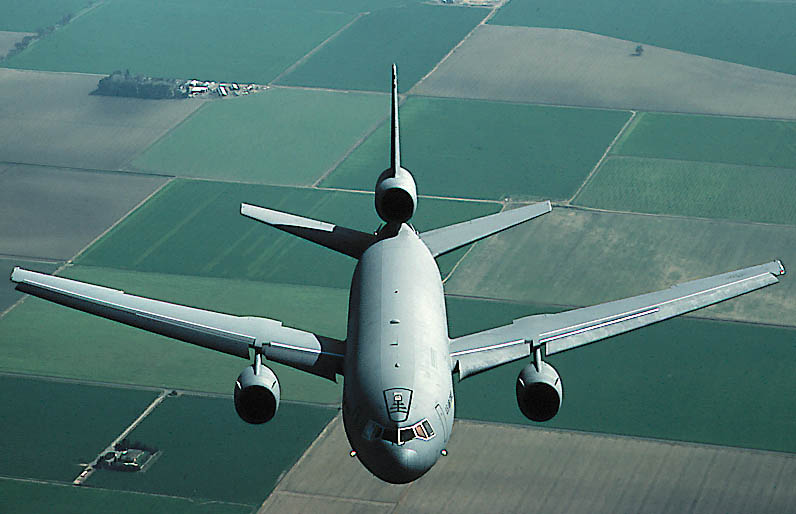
Extender in flight

FILE PHOTO -- The KC-10A Extender is an Air Mobility Command advanced tanker and cargo aircraft designed to provide increased global mobility for U.S. armed forces. Using either an advanced aerial refueling boom, or a hose and drogue refueling system, the KC-10A can refuel a wide variety of U.S. and allied military aircraft. It is equipped with special lighting for night operations. The KC-10A's boom operator controls refueling operations through a digital fly-by-wire system. Sitting in the rear of the aircraft, the operator can see the receiver aircraft through a wide window. During boom refueling operations, fuel is transferred to the receiver at a maximum rate of 1,100 gallons per minute; the hose and drogue refueling maximum rate is 470 gallons per minute. The KC-10A can be air-refueled by a KC-135 or another KC-10A to increase its delivery range.